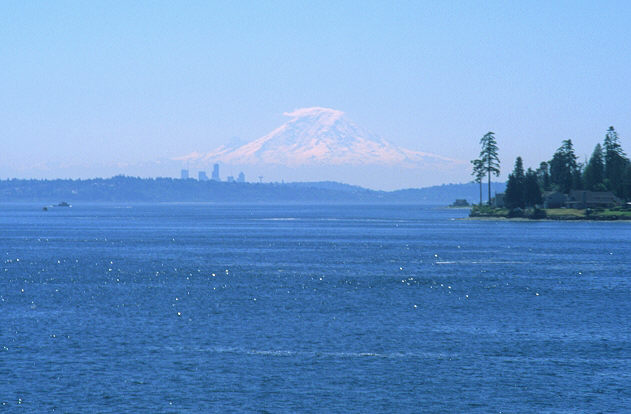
Seattle skyline and Mt. Rainier from Kingston-Edmonds ferry.